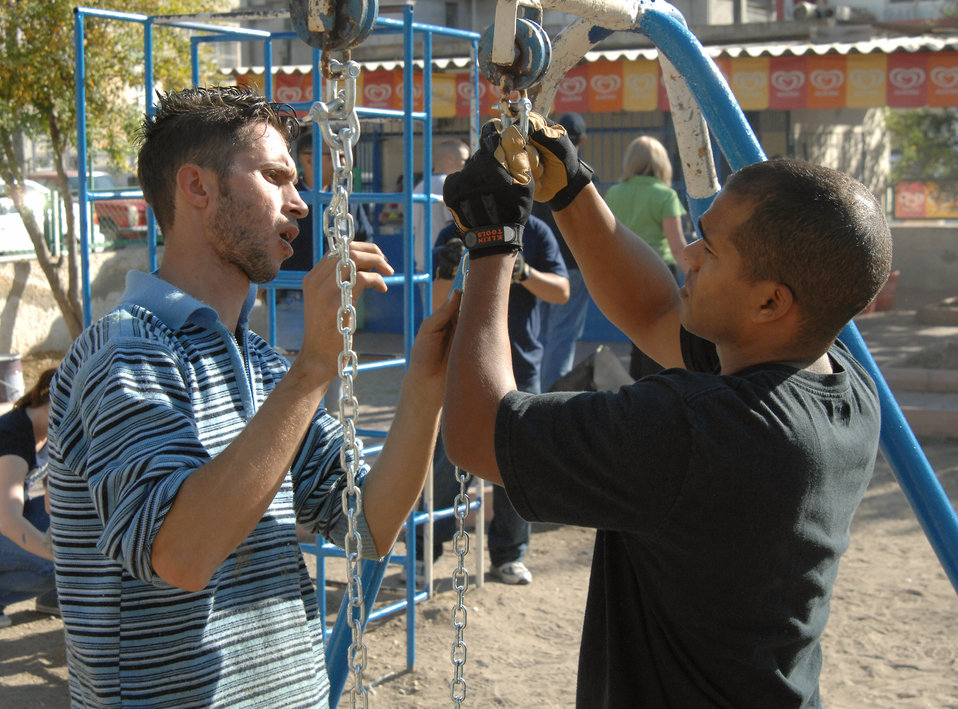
Incirlik volunteers strengthen community

Ramazan Celebi and Tech Sgt. Adanzy Hart replace swings at an Incirlik Village park Nov. 15 at Incirlik Air Base, Turkey. Sergeant Hart, assigned to the 39th Civil Engineering Squadron, and Mr. Celebi were among the estimated 75 volunteers present who helped the Incirlik Air Base Chapel staff renovate the park.